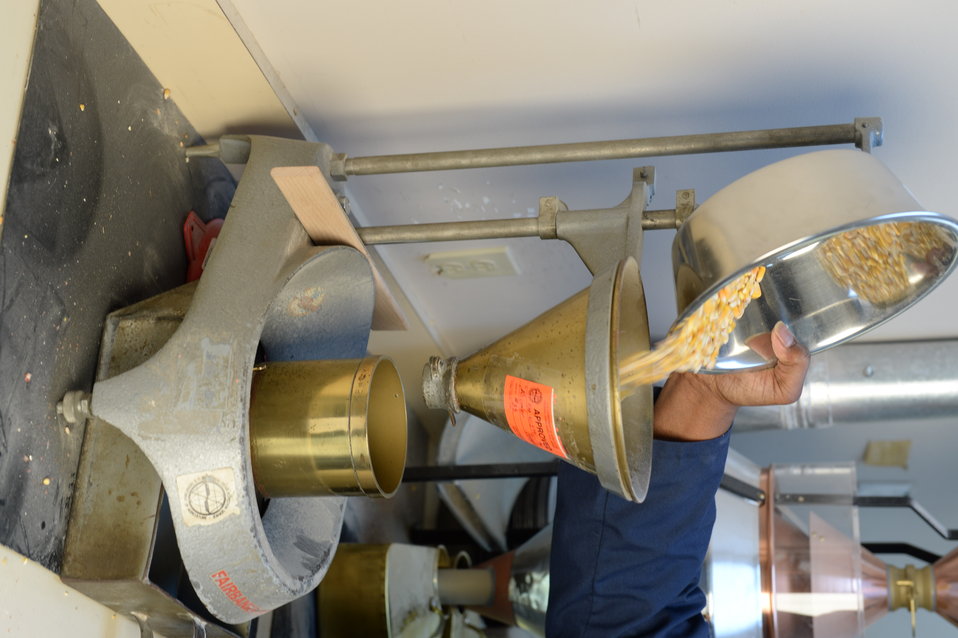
A U.S. Department of Agriculture (USDA) Grain Inspection, Packers and Stockyards Administration (GIPSA) Federal Grain Inspection Service (FGIS) scientist tests corn at the FGIS inspection laboratory in New Orleans, LA on Monday, Nov. 18, 2013.